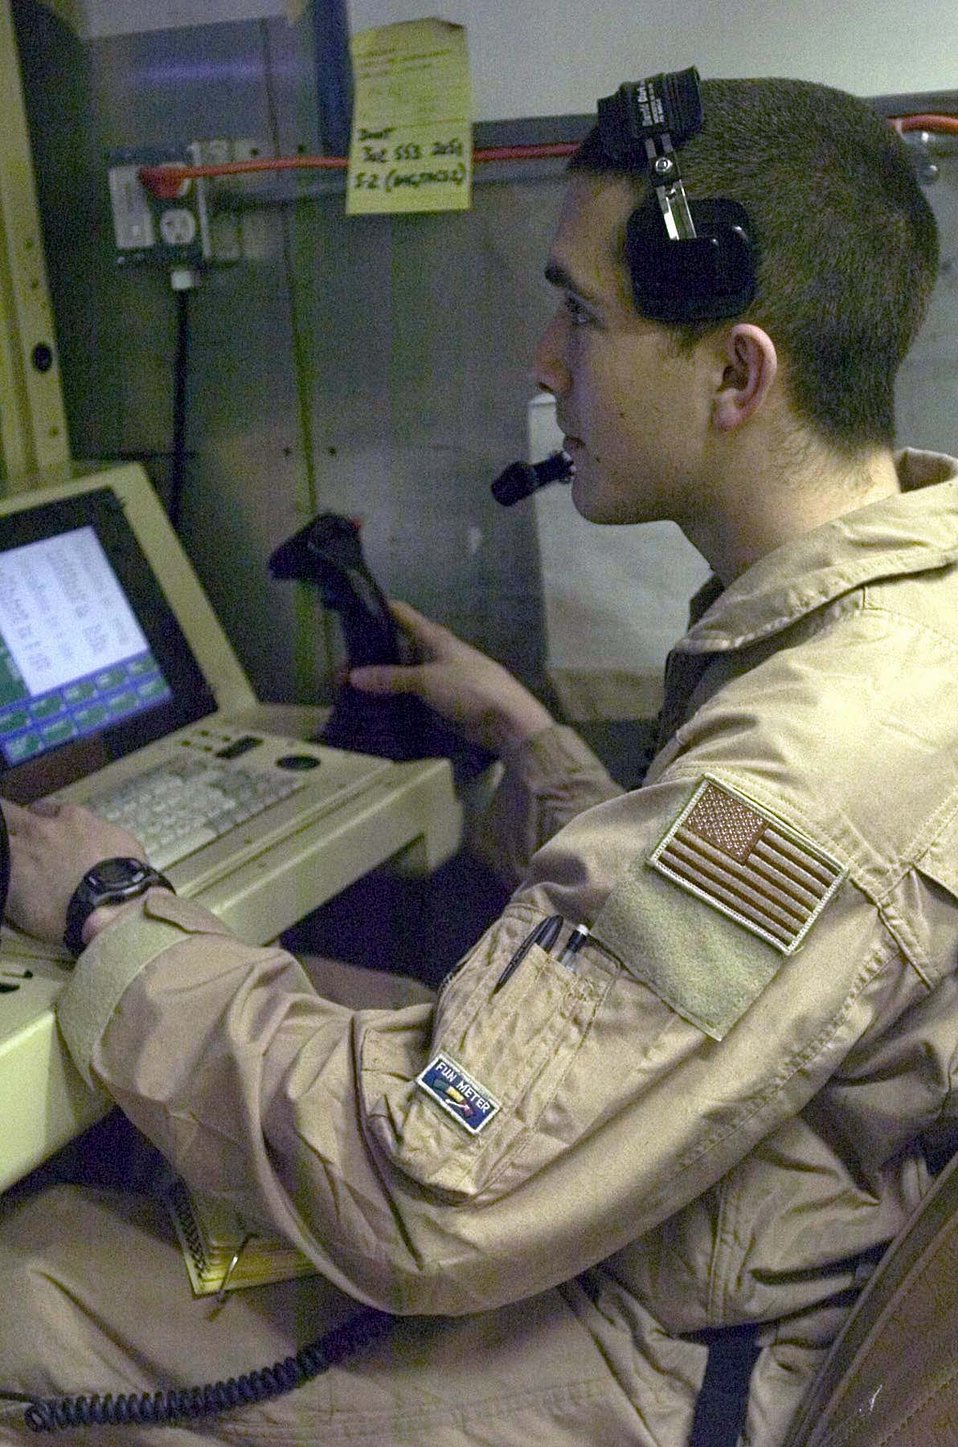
Predators protect troops

BALAD AIR BASE, Iraq -- Airman 1st Class Tyler Farley controls the virtually undetectable RQ/MQ-1 Predator unmanned aerial vehicle's cameras from his seat on the ground. Airman Farley is a sensor operator.